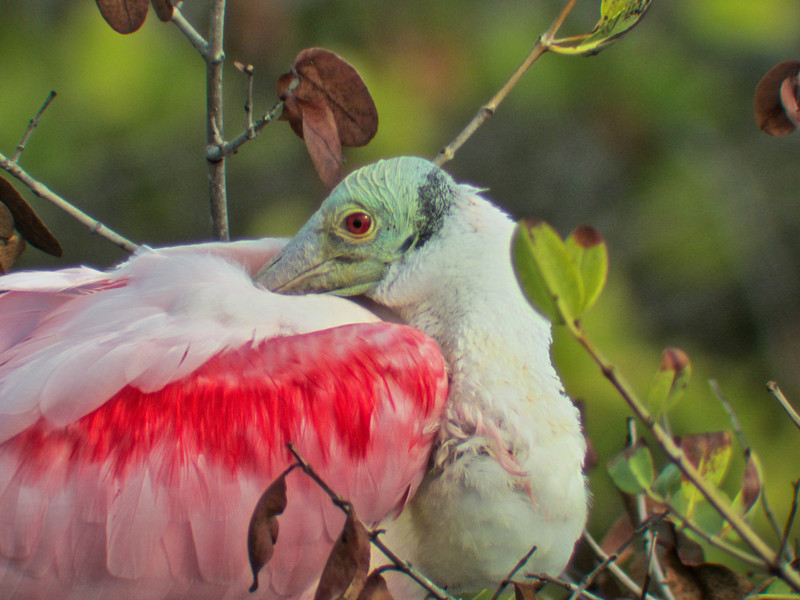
roseate spoonbill

Merritt Island National Wildlife Refuge, FL